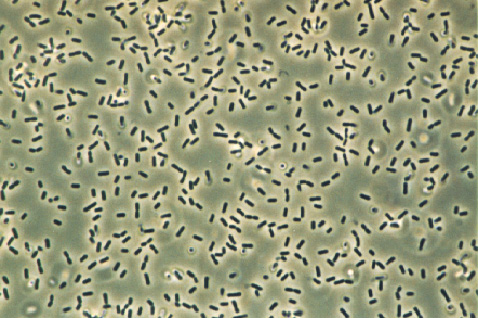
Deutsch: Mikroskopaufnahme von Bacillus subtilis aus Flüssigkultur (Phasenkontrast, 1000fach) Fotographiert von Benutzer:Kookaburra